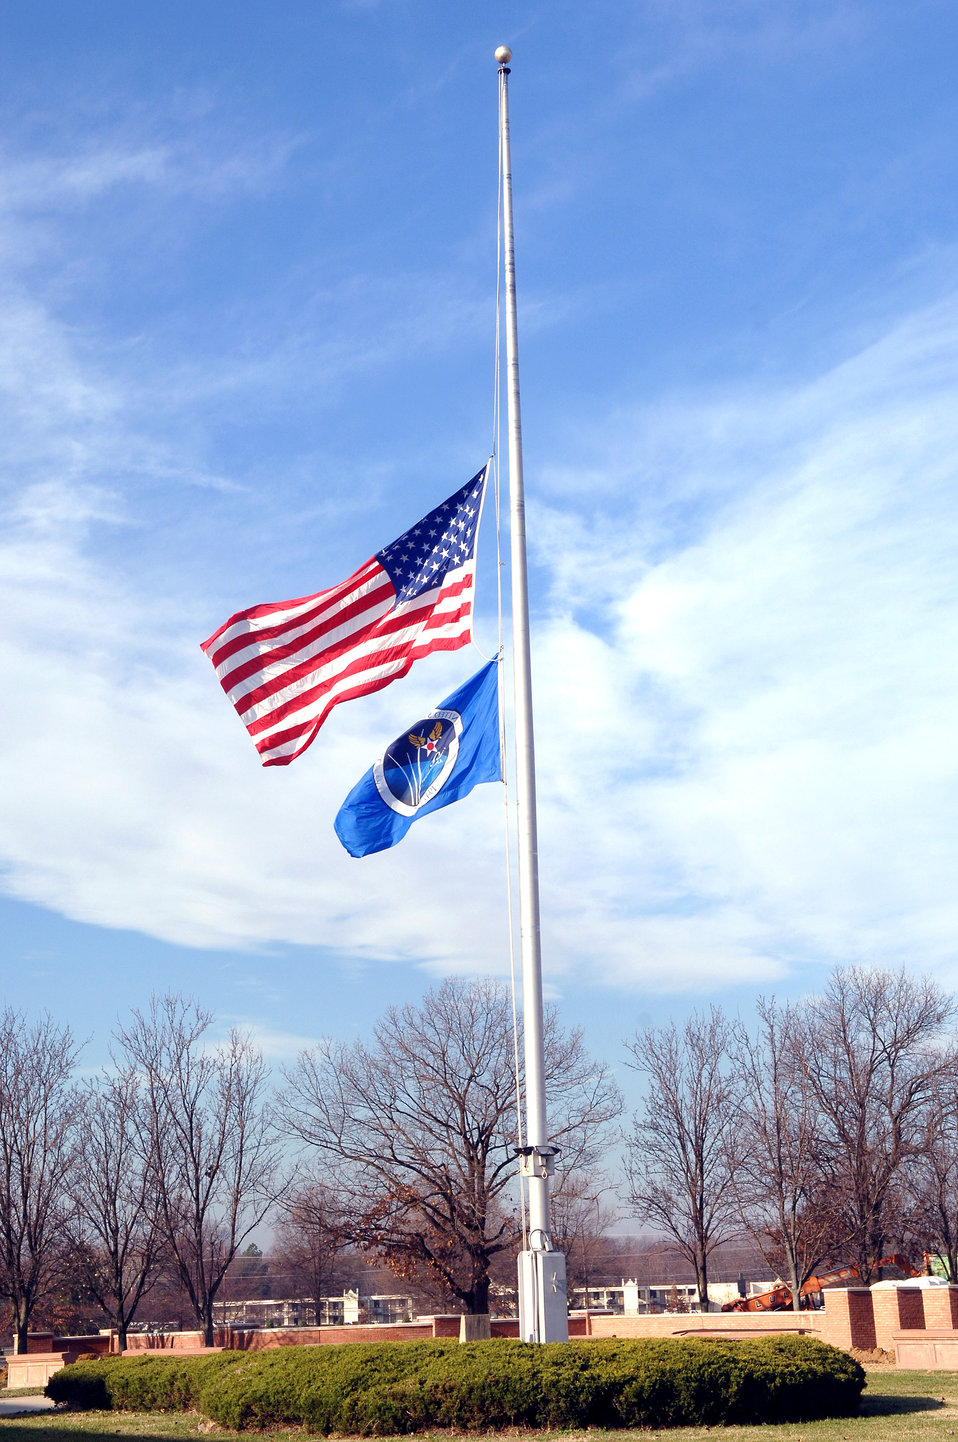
Honoring President Ford

The American flag at Andrews Air Force Base, Md. flies at half staff Dec. 29 in honor of former President Gerald Ford who died Dec. 26 at age 93. President George W. Bush has declared Jan 2 a national day of mourning.